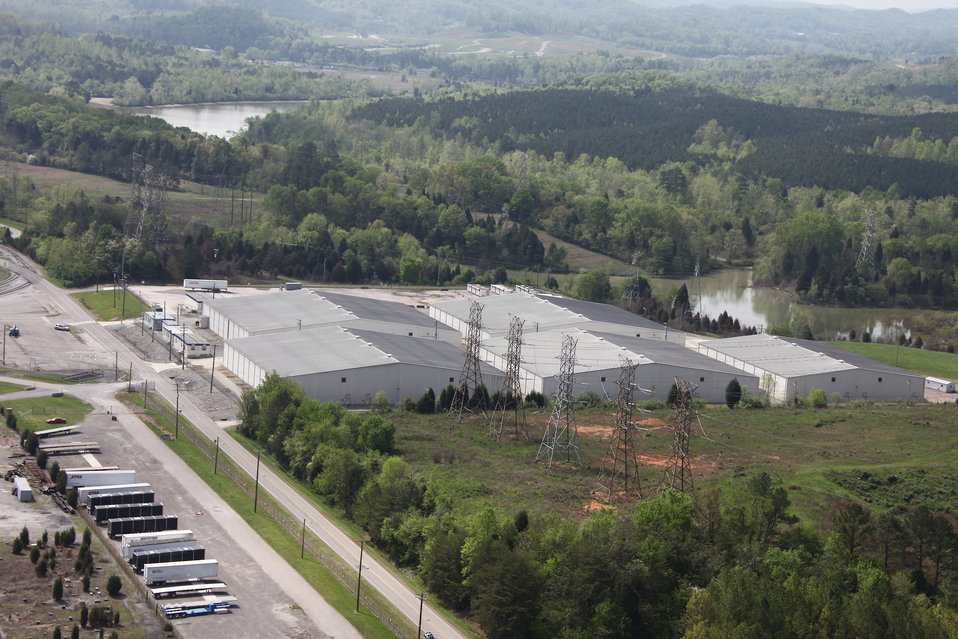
ETTP